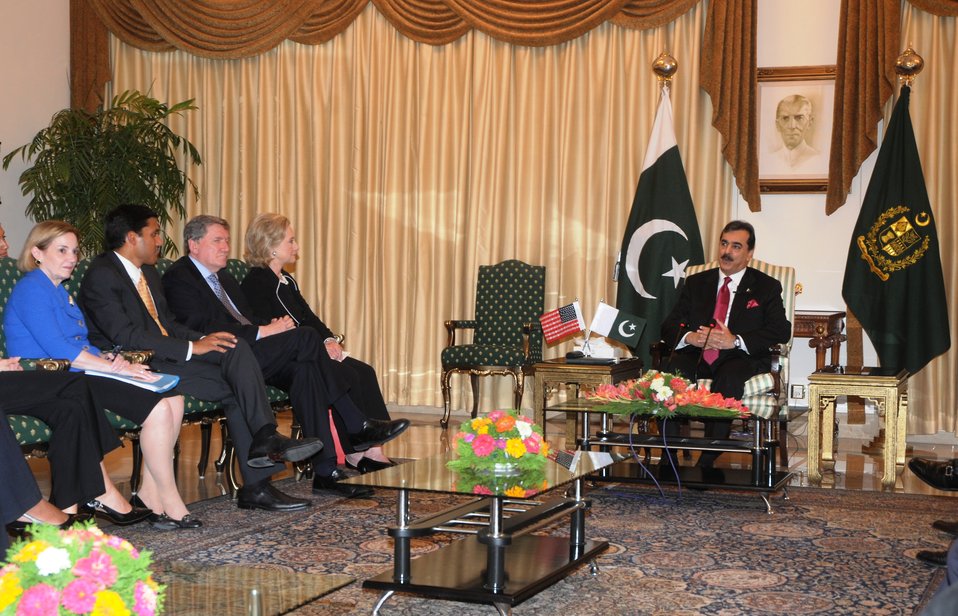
Secretary Clinton, Ambassador Patterson, USAID Administrator Shah, and Special Representative Holbrooke Meet With Pakistani Prime Minister Yousaf Raza Gilani

U.S. Secretary of State Hillary Rodham Clinton and the U.S. delegation, featuring (L to R) U.S. Ambassador to Pakistan Anne W. Patterson, USAID Administrator Rajiv Shah, U.S. Special Representative for Afghanistan and Pakistan Richard C. Holbrooke, meet with Pakistani Prime Minister Yousaf Raza Gilani at the Prime Minister’s House in Islamabad, Pakistan, on July 18, 2010.